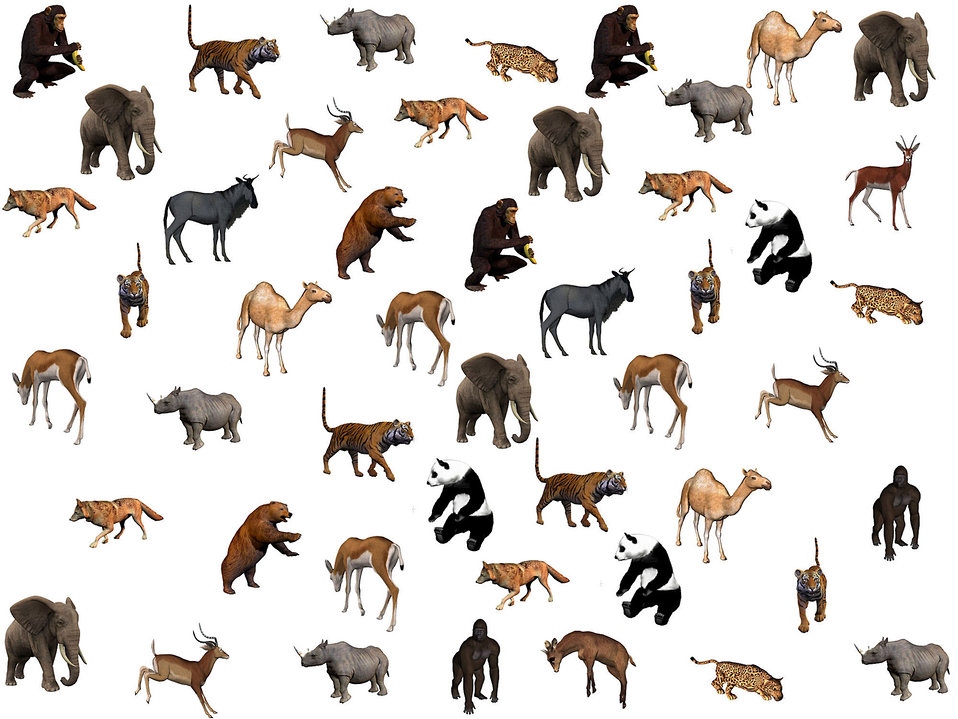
Background 311

Background.